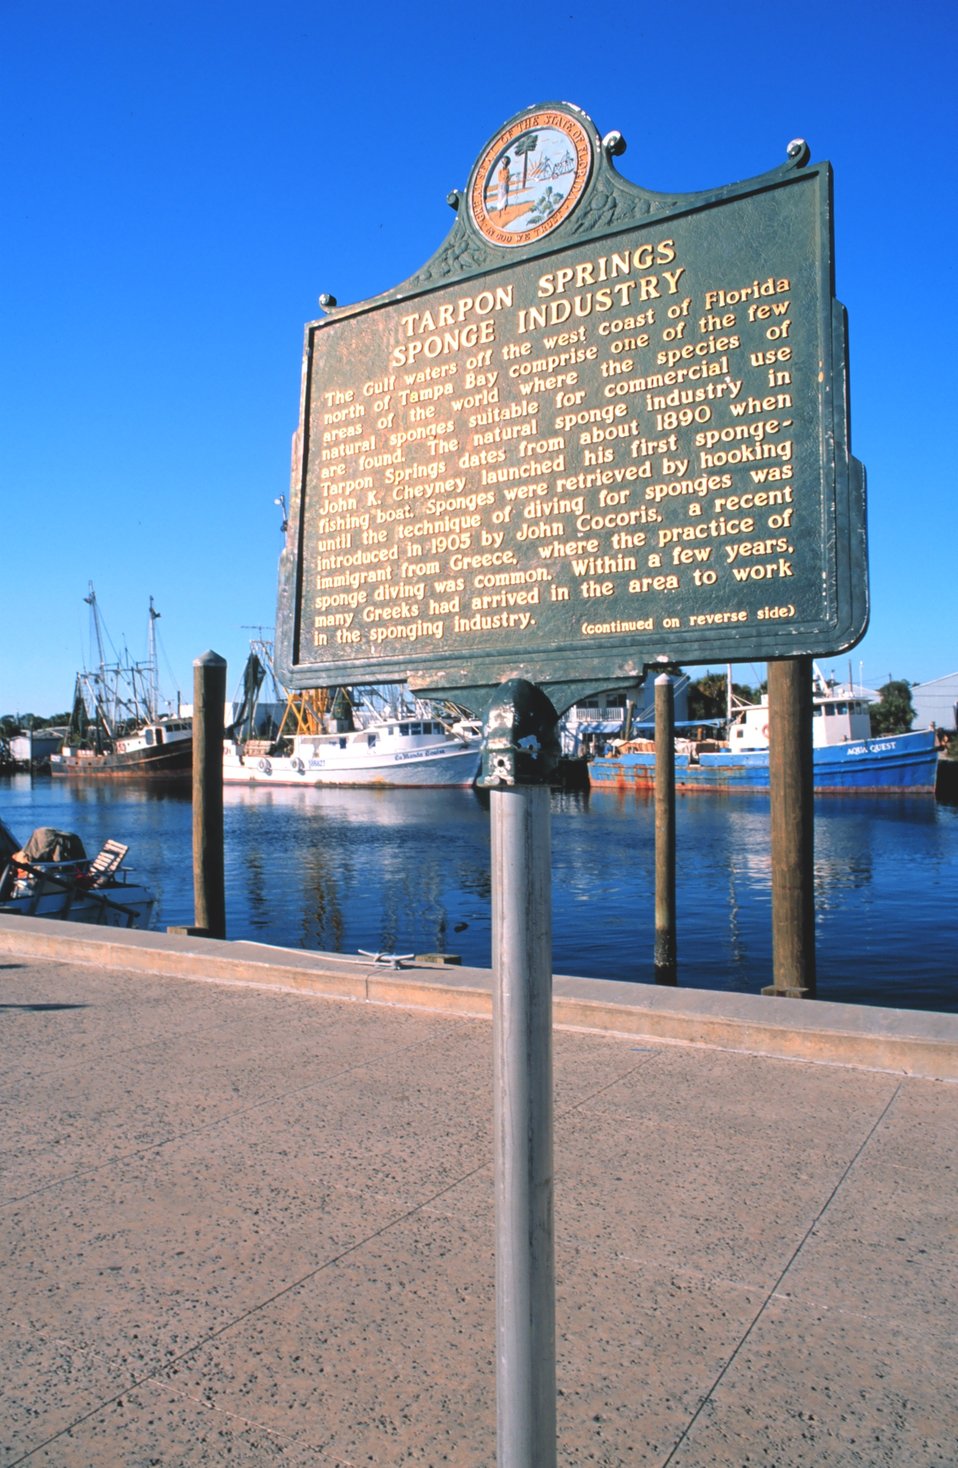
A sign commemorating the sponge fishing industry at Tarpon Springs